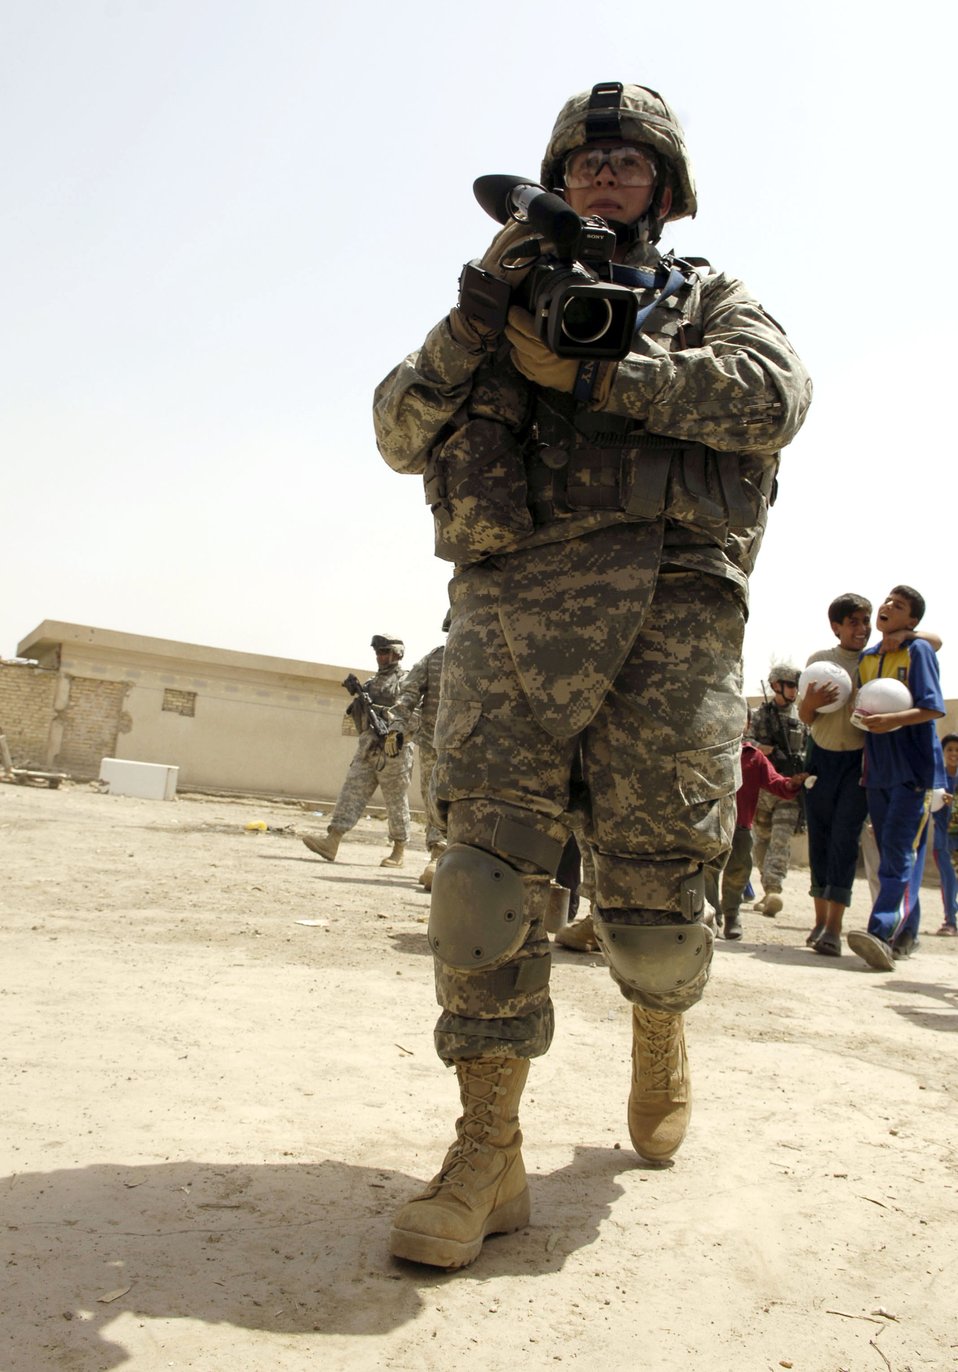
Gifts for the tender hearts

Senior Airman Geneva Stone captures happy moments May 24 of children getting gifts from the Iraqi National Police in Al Furat, Iraq. Airman Stone is a combat videographer assigned to the 1st Combat Camera Squadron in Charleston, S.C. During a recent humanitarian mission, U.S. servicemembers worked with the Iraqi police to distribute school supplies, toys and treats to Iraqi children.